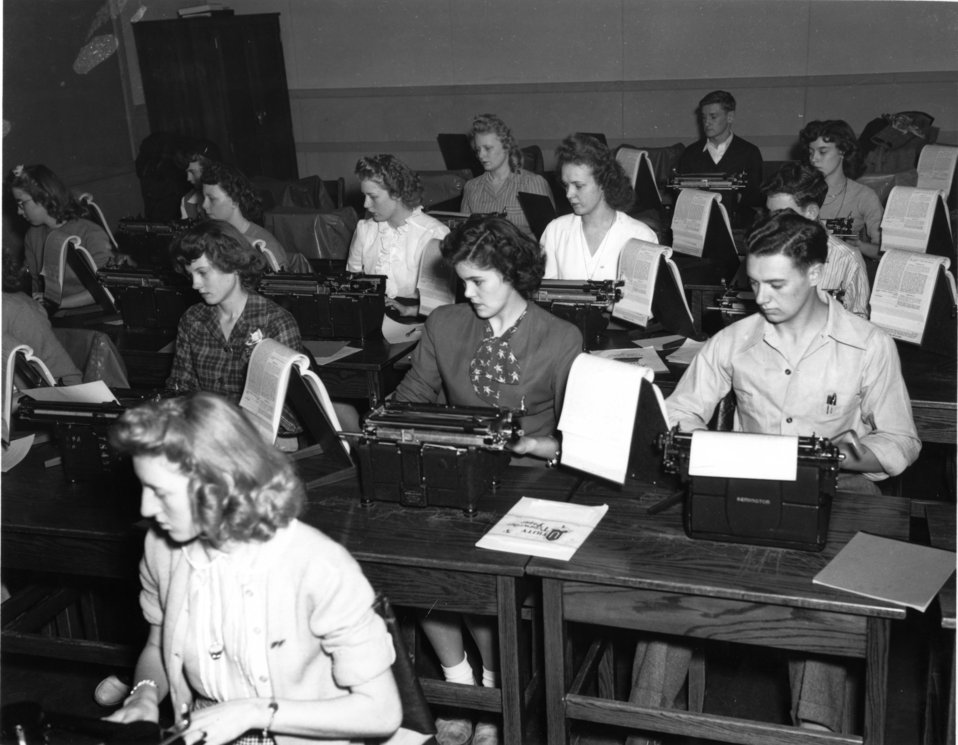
Schools at Oak Ridge